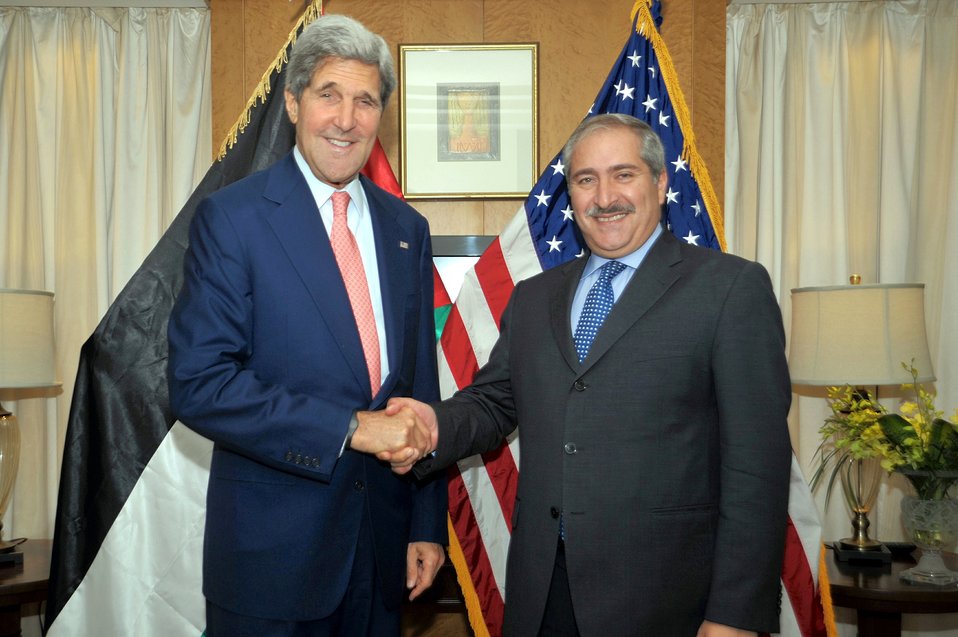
Secretary Kerry Shakes Hands With Jordanian Foreign Minister Judeh

U.S. Secretary of State John Kerry shakes hands with Jordanian Foreign Minister Nasser Judeh after their meeting in Amman, Jordan, on July 16, 2013.